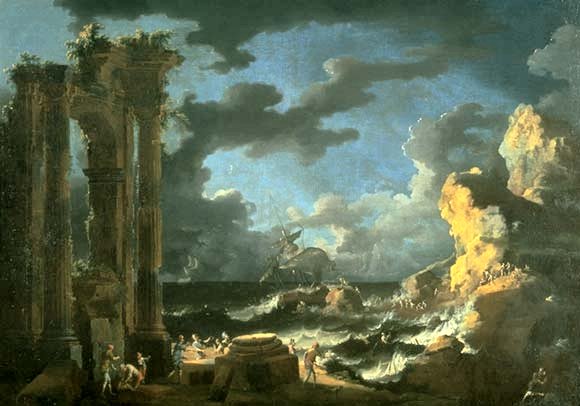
'Port of Ostia During a Tempest', oil on canvas painting by Leonardo Coccorante, 1740s, Lowe Art Museum